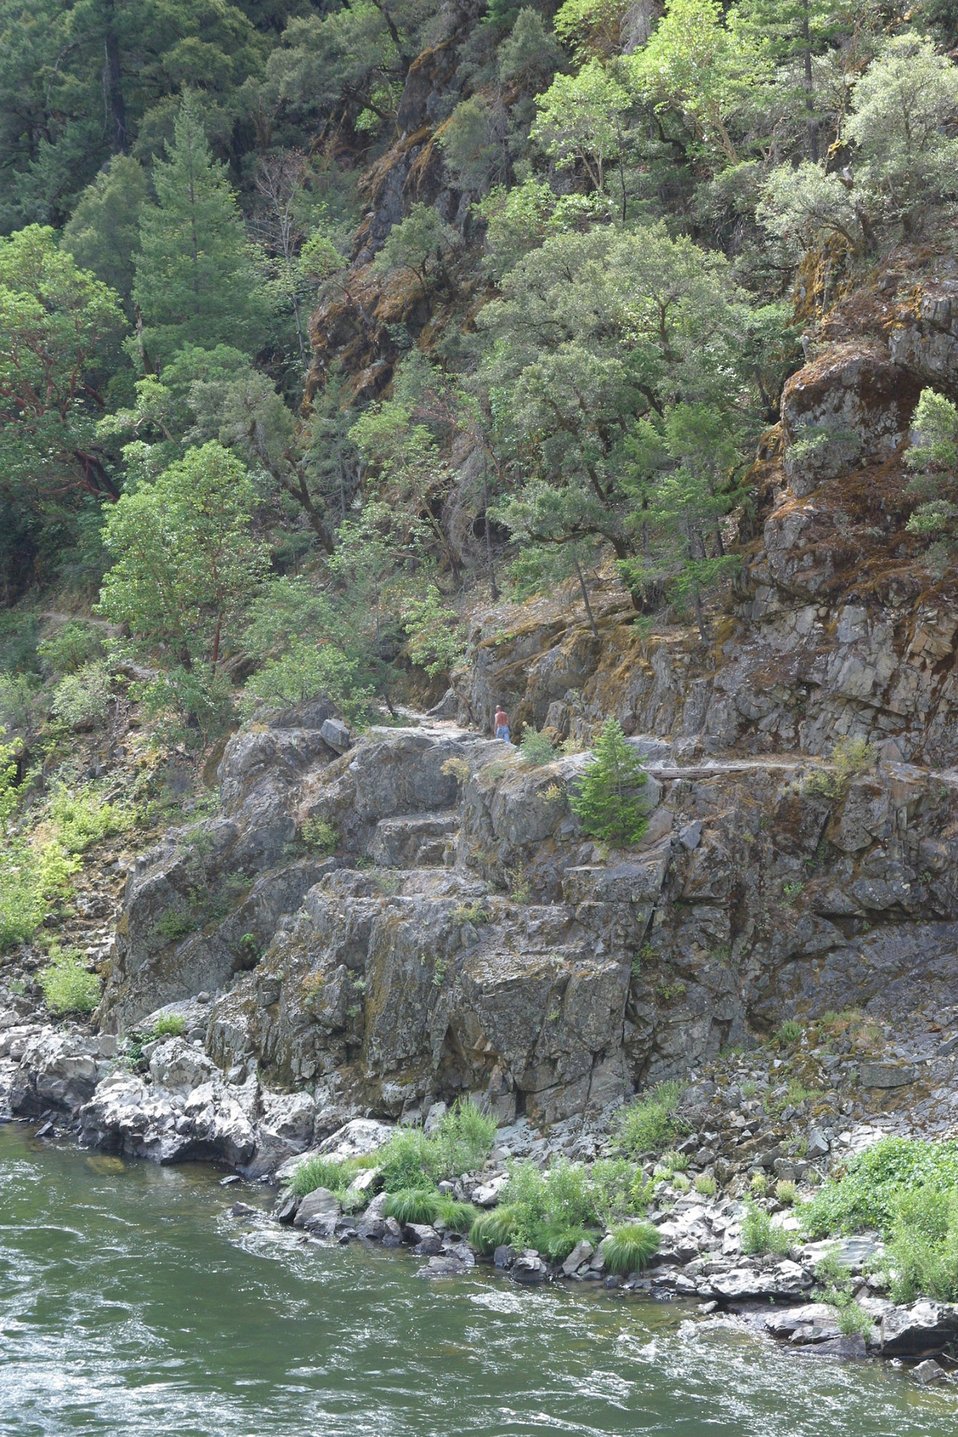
Hiking Rainie Trail between Grave Creek and Rainie Falls.